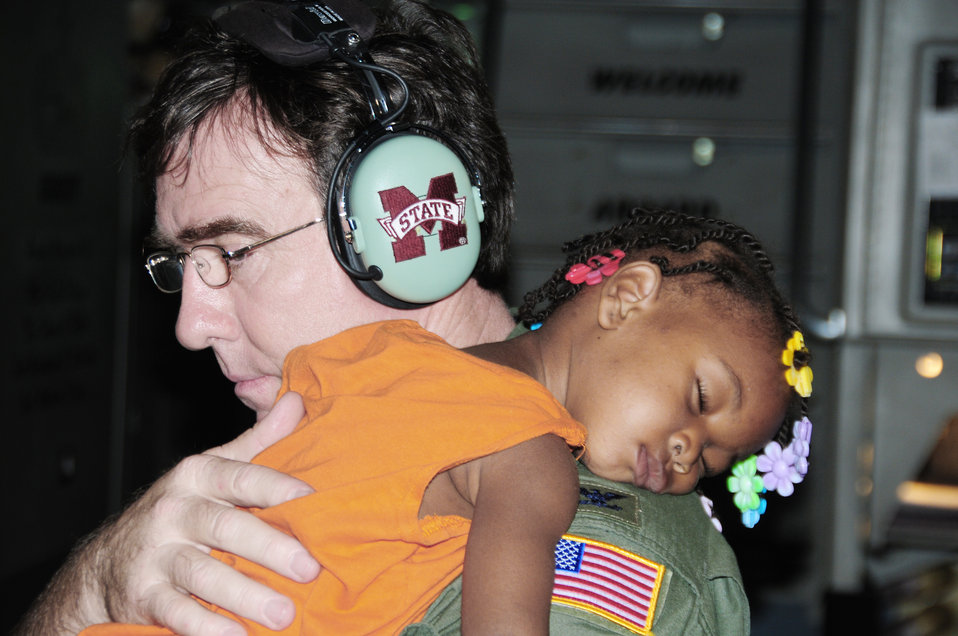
Operation Unified Response

Col. Todd Wall holds a Haitian baby for a mother who was asleep from exhaustion Jan. 21, 2010, at Toussaint L'Ouverture International Airport in Port-au-Prince, Haiti. Colonel Wall is a C-17 Globemaster III pilot.